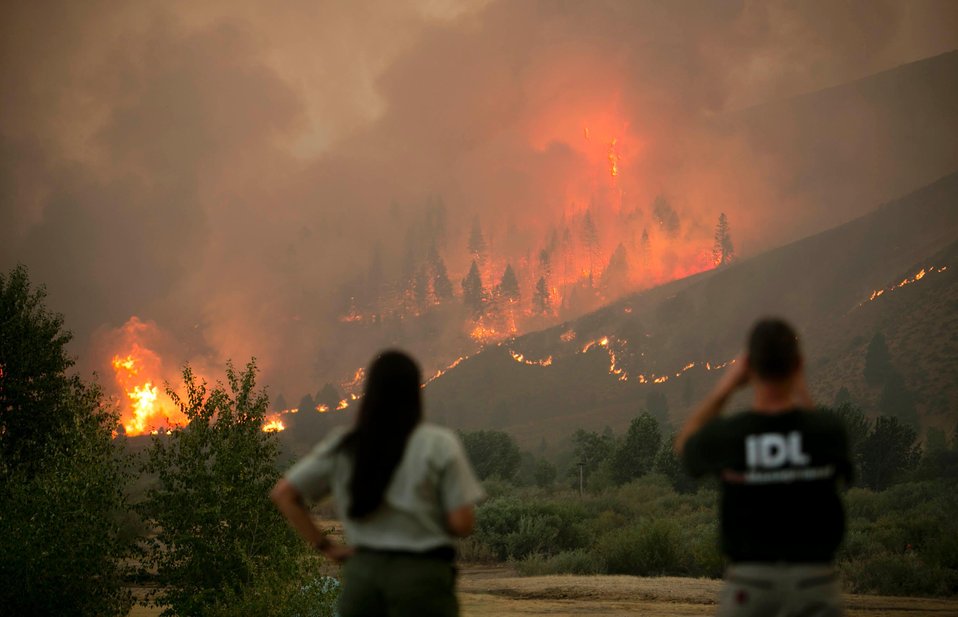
Fire crews look on a night fire from base camp at the Elk Fire Complex Fire. The Elk Complex Fire in the Boise National Forest near Pine, ID began on Aug. 08, 2013 by lightning has consumed approximately 98,413 acres and is approximately 5% contained.